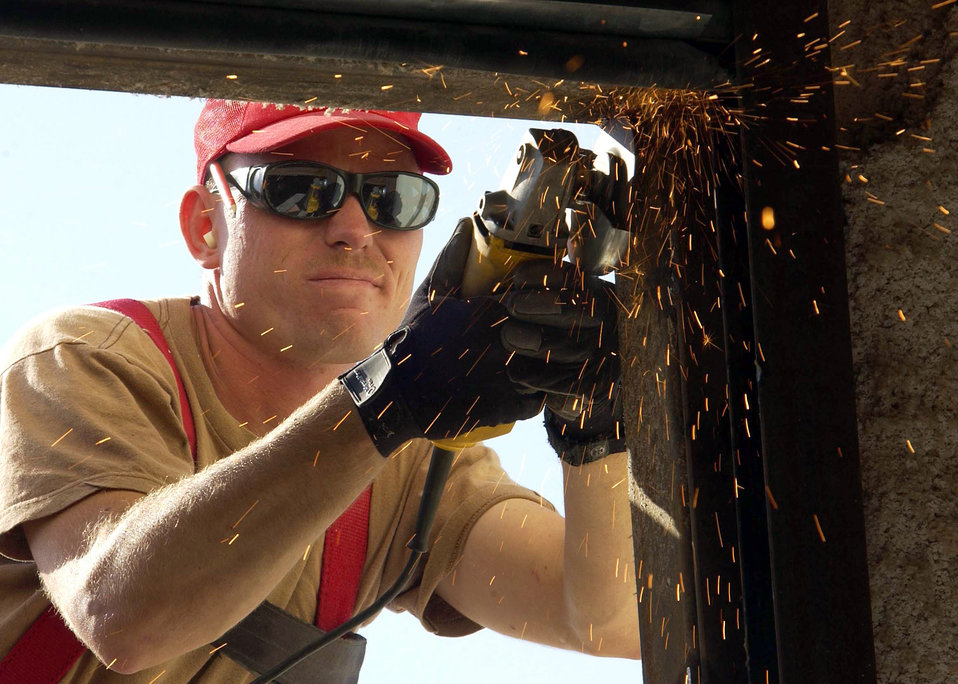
What a grind

SOUTHWEST ASIA (AFPN) -- Staff Sgt. Richard Panepinto grinds down a weld for a roll-up door at a forward-deployed location here Jan. 30. Sergeant Panepinto is assigned to the 1st Expeditionary Red Horse Group. Red Horse units provide the Air Force with a mobile civil engineer response force to support contingency and special operations worldwide.